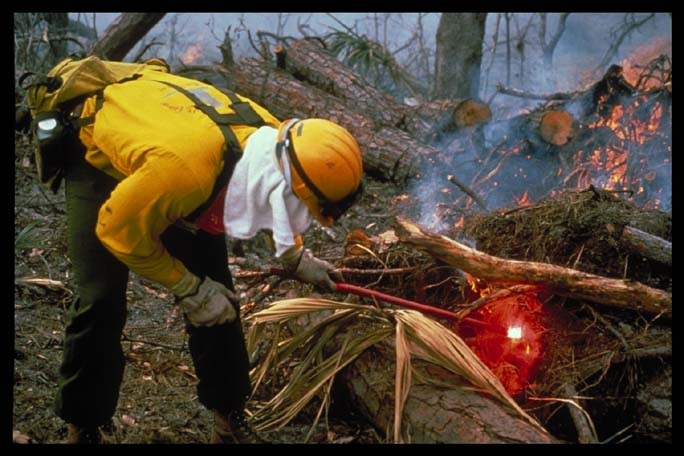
Prescribed fire